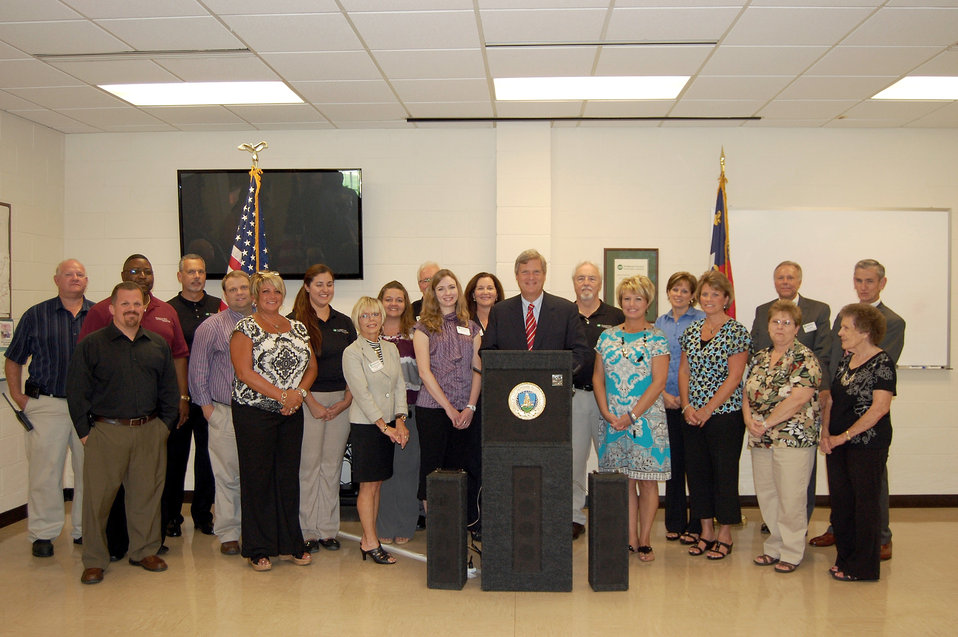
Agriculture Secretary Tom Vilsack (center) with the Piedmont Electric Membership Corporation (EMC) staff in Hillsborough, NC., on Friday, Sept. 7, 2012. Piedmont EMC received a guaranteed loan from the U.S. Department of Agriculture (USDA) to extend its system by 52 miles and to help provide service to about 1,000 new member consumers. The cooperative will also increase capacity for 100 current consumers and improve the reliability of about 40 miles of line.